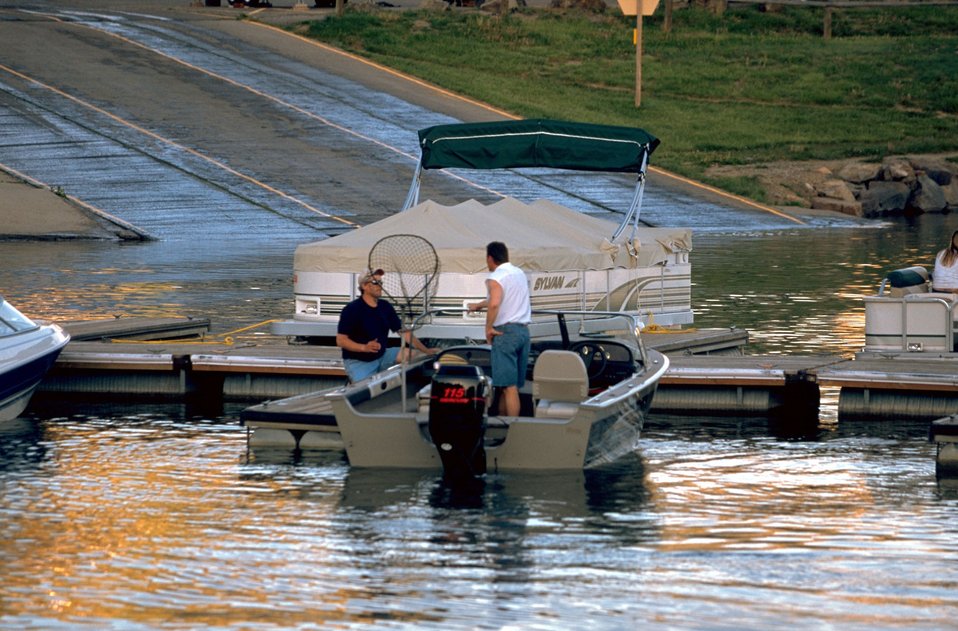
Fishermen at the marina at Holter Lake